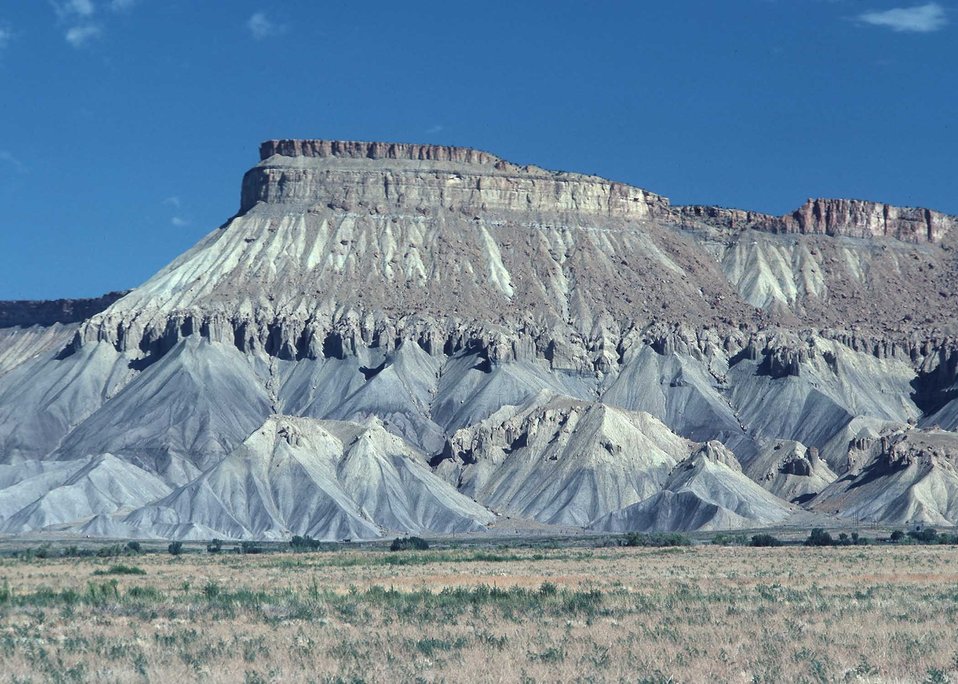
Mancos shale is eroded by the forces of wind and water.